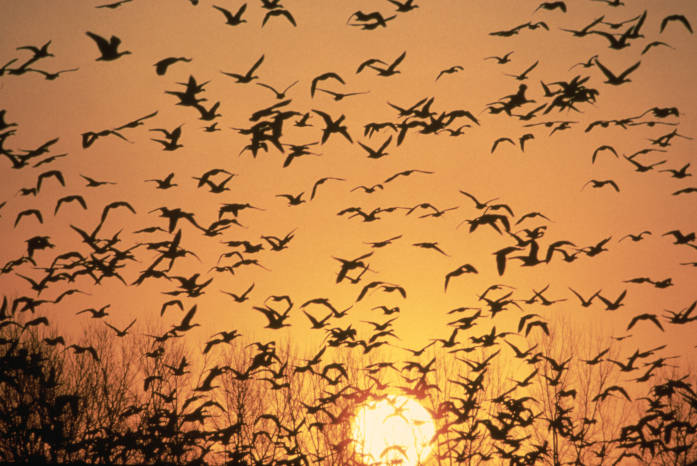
geese at sunrise